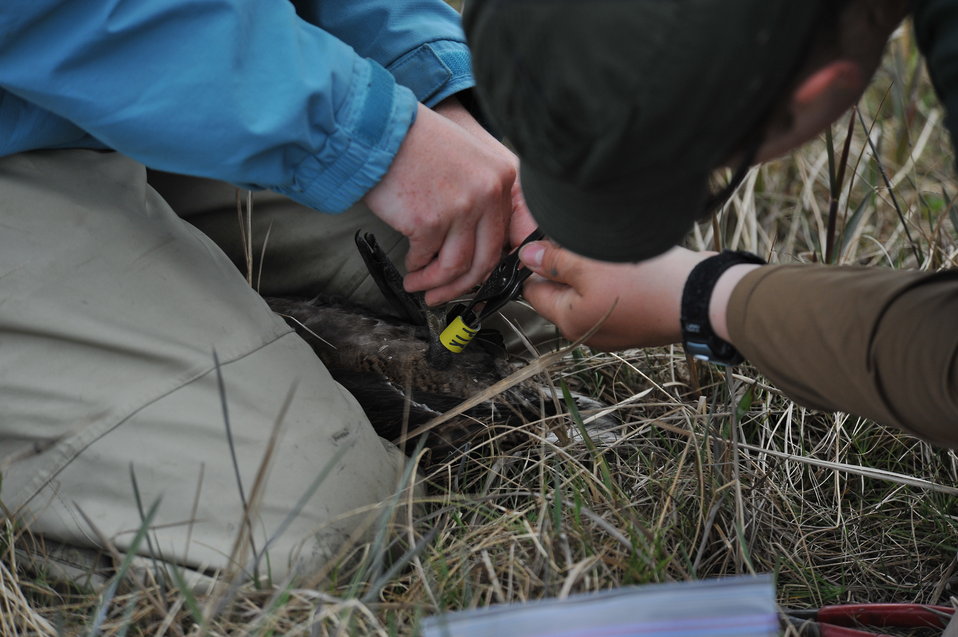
Tarsal Band Application

Tarsal bands are a unique identifier that researchers are able to resight or read with bionoculars, scopes, or photography.

USFWS Yukon Delta NWR